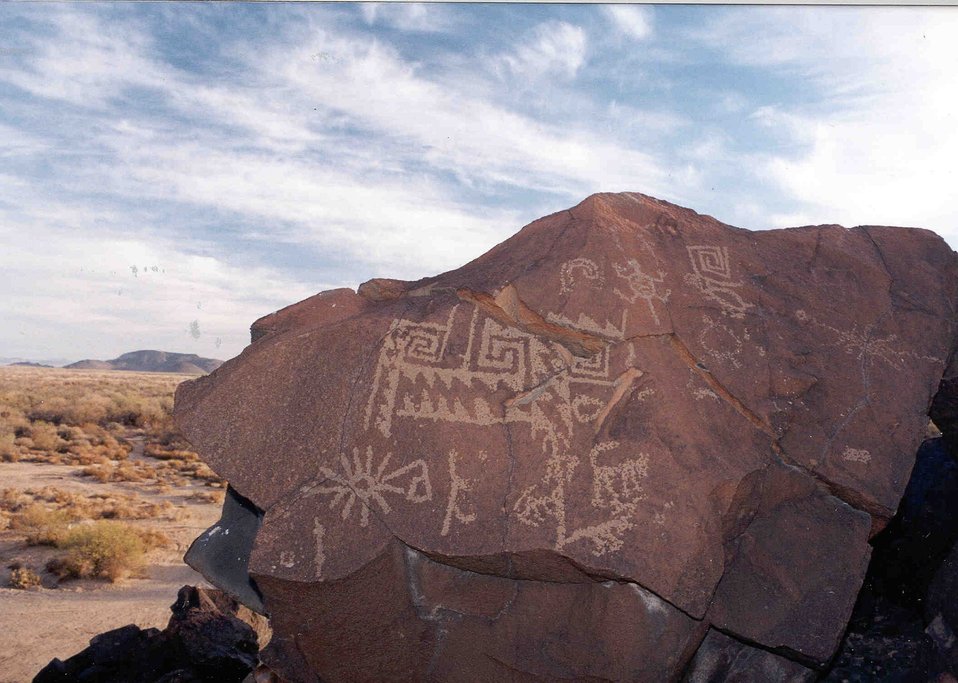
Petroglyphs at Sears Point Archaeological Site